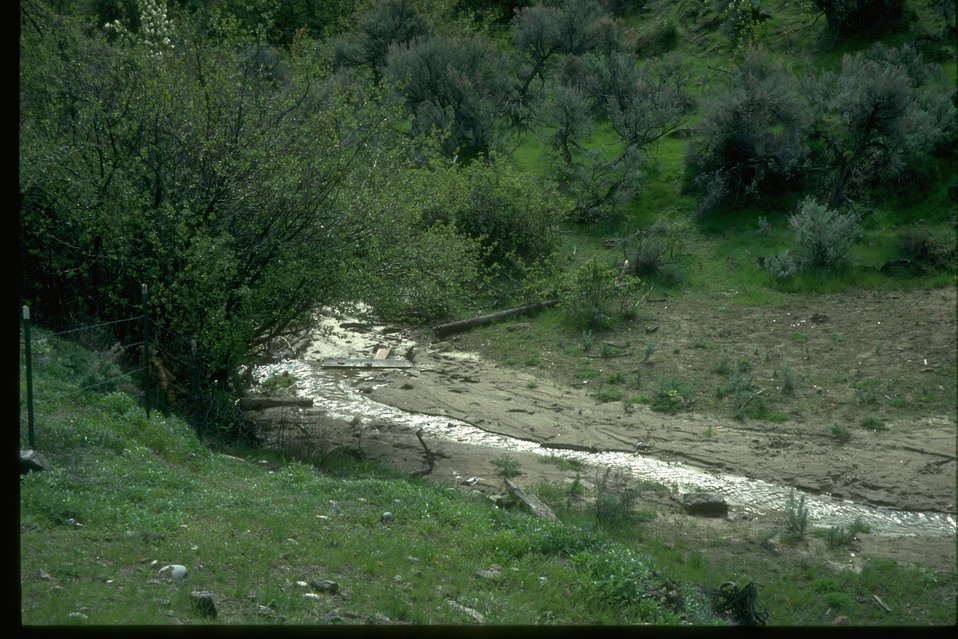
Sediment deposition/bank building in small stream in Chelan County, WA.